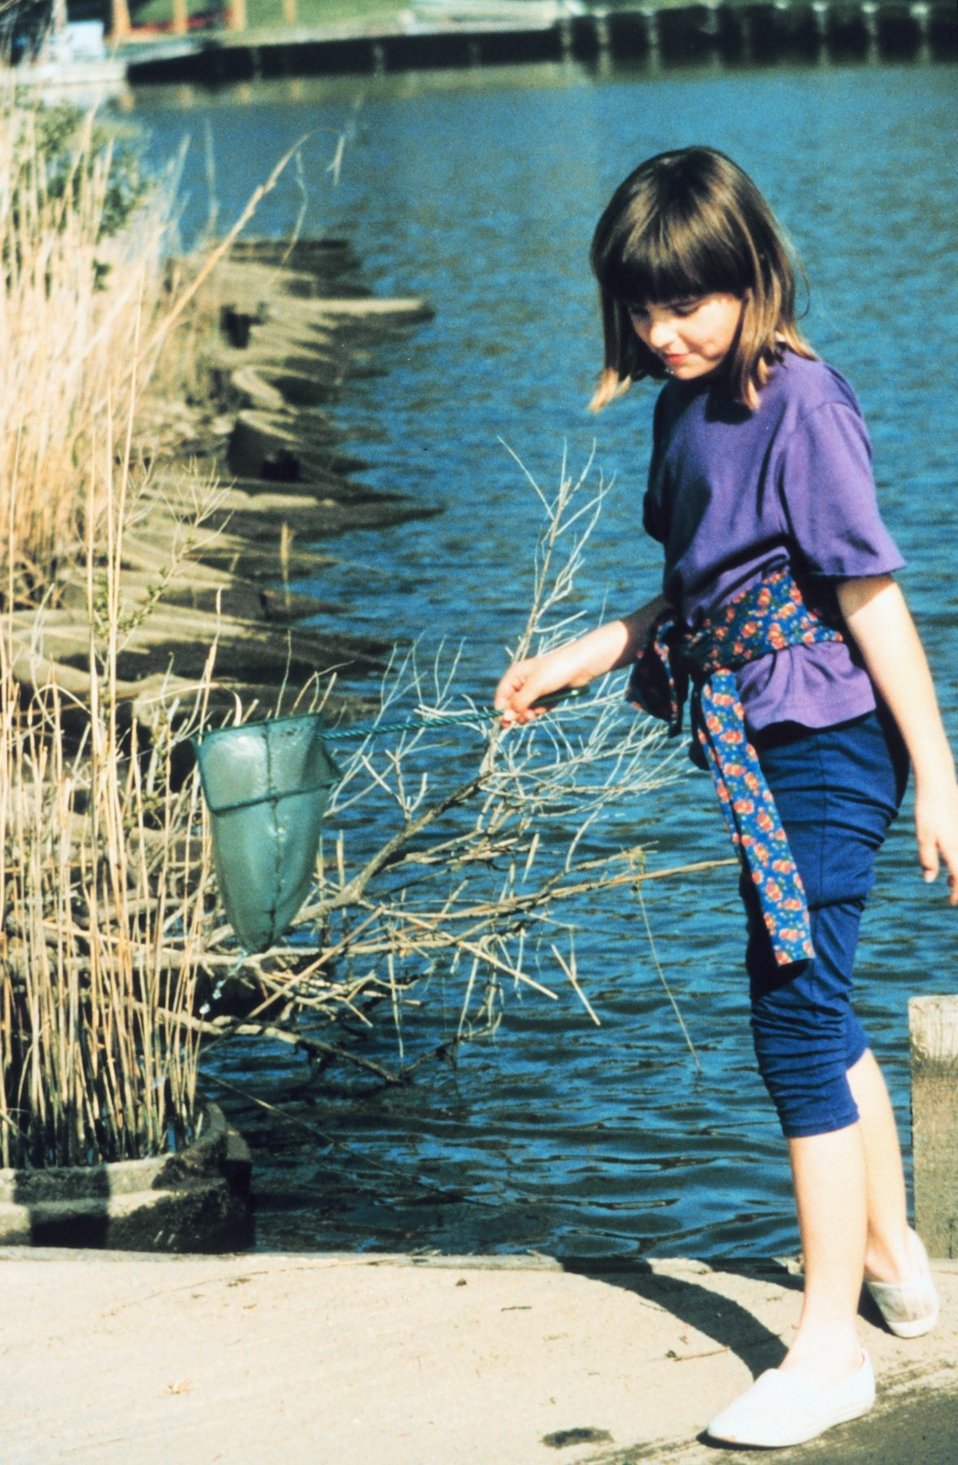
Searching for 'critters' with a small net in a side creek to the Patuxent River.